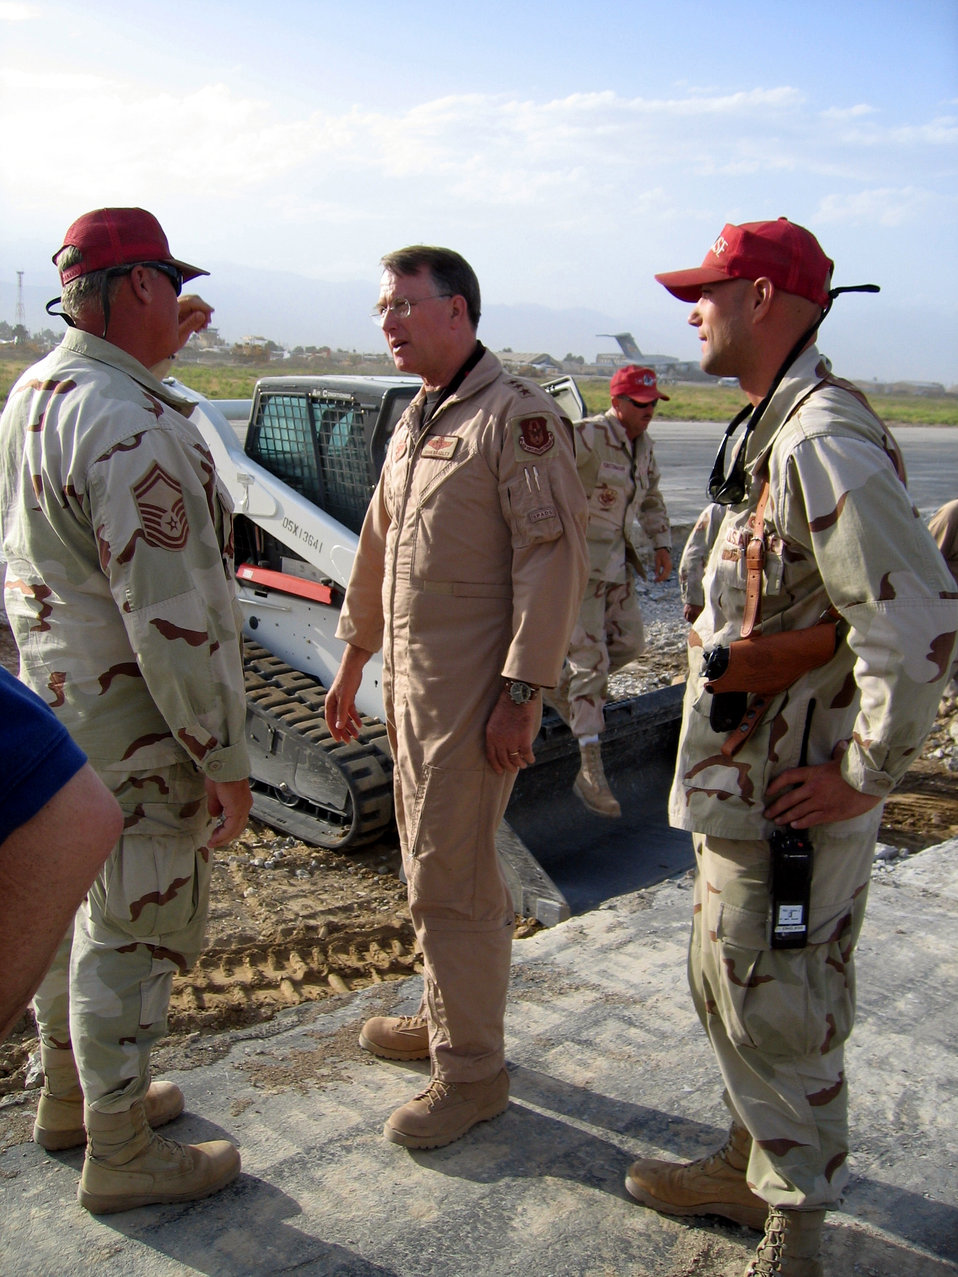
General sees 'seamless' force in Southwest Asia

AFGHANISTAN -- Lt. Gen. John A. Bradley (center), commander of Air Force Reserve Command, chats with reservists from a Red Horse unit deployed here to repair runways.